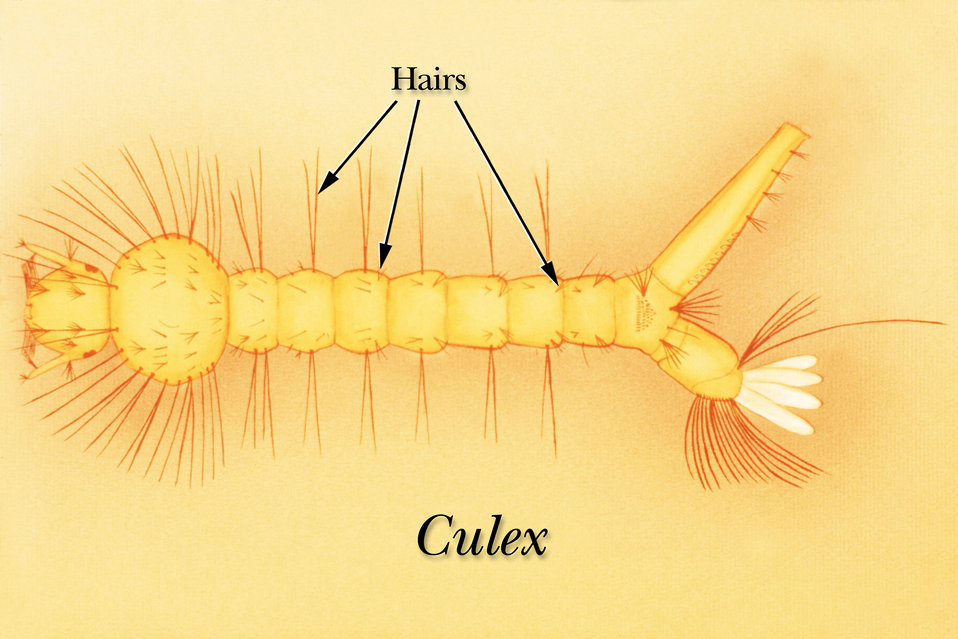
Illustration identifying hairs on the abdominal segments of a Culex mosquito larva.